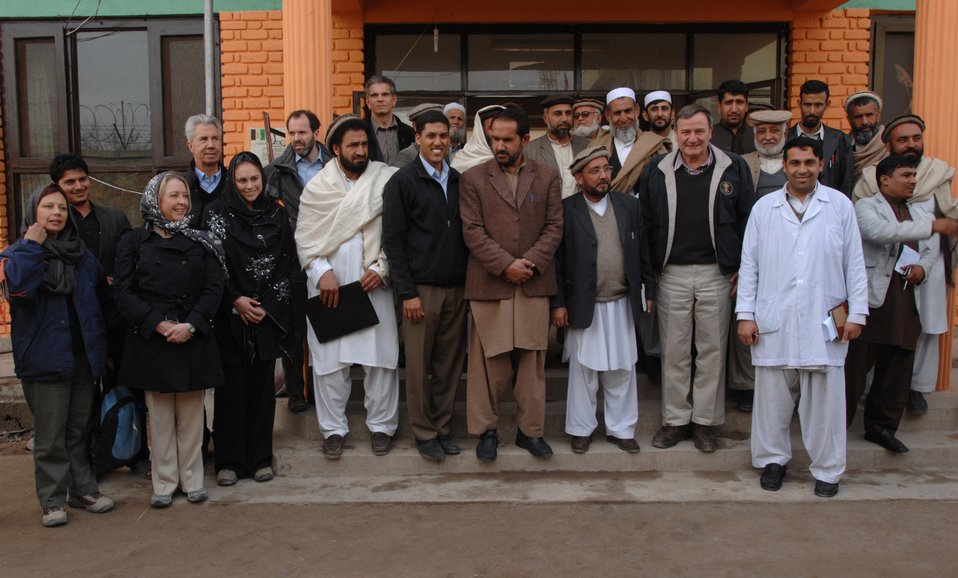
110209sv Shah169

U.S. Ambassador Karl W. Eikenberry and Dr. Rajiv Shah, Administrator of the United States Agency for International Development (USAID), in Nangarhar province on Wednesday, February 9, 2011. (S.K. Vemmer/Department of State)